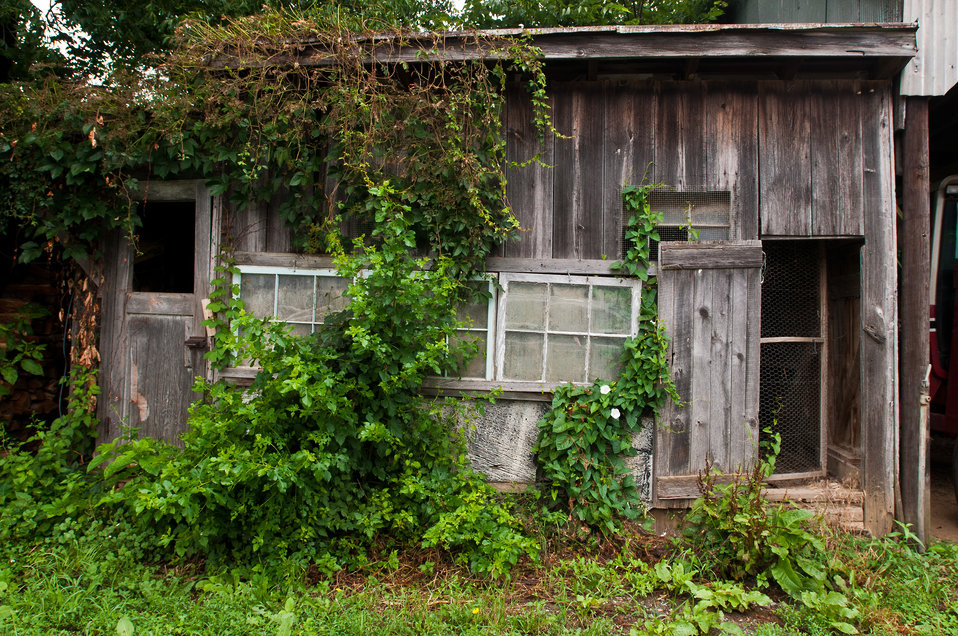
As with most farms, there are rustic buildings and vehicles to give contrast to the inovative things going on at Nick’s Organic Farm, owned by Nick Maravell, in Adamstown, MD on Friday, July 12, 2013. The farm produces Black Angus beef, chicken, turkey, eggs, hay, soybeans, corn, alfalfa, orchard grass, rye; and other crops. The cattle are 100% grass-fed receiving certified organic pasture, certified organic hay (in winter), water and mineral salts mixed with sea kelp. The cattle are not fed hormones, antibiotics or animal products. Poultry feed from grain is ground from organic grain. The poultry also graze on organic pastures. The farm has conducted on-farm research with federal, state and non-profit agencies to refine organic practices. An organization such as the U.S. Department of Agriculture (USDA) Agricultural Research Service (ARS) center in Beltsville has been able to conduct research to improve organic crops and to breed and manage the cattle so that they have. George Kloph is the farm assistant at this site.